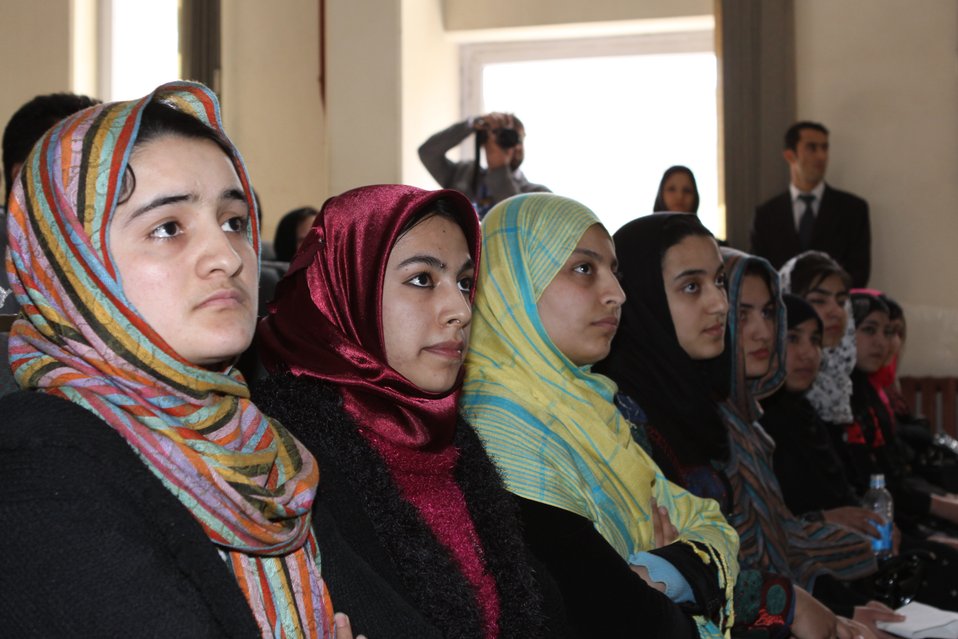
Female University Students Complete Internship

Kabul, Afghanistan | March 16, 2011 – In response to a demand for qualified Afghan engineers, Kabul University celebrated completion of an intensive five-month Mentor Protégé Training Program today by 10 female fourth year university students. The Training Program is a joint effort between the Government of the Islamic Republic of Afghanistan, the U.S. Agency for International Development (USAID), and the Universities of Kabul, Kandahar, Alberoony in Kapisa, Shiekh Zayed in Khost. The graduation ceremony highlighted collaboration with these national institutions in building the technical skills of young Afghans, made possible by USAID.

Four of the interns are engineers, while the remaining six are from the faculties of computer science, economics, and psychology.

Speaking about the event, H.E. Minister of Public Works Abdul Qudus Hamidi said, “The future of Afghanistan lies in developing the skills of our youth, and the engineering skills of these graduates today represent a small but important step forward for the country.”

Keynote speakers at the ceremony included H.E. Deputy Minister of Higher Education Abdul Rahim; USAID Senior Deputy Mission Director Robert Hellyer; and Chancellor of Kabul University Professor Hamidullah Amin. Approximately 150 people, including current and former students attended the graduation.

Launched last year, the Mentor Protégé Training Program has provided qualifying students the opportunity to intern with USAID’s Strategic Provincial Roads-South and East Afghanistan project and gain practical experience in a real work environment. The goal of the program was to offer interns the opportunity to gain hands-on experience to reinforce their formal studies. A total of 30 students from four national universities have benefitted from this program.

“The promotion of women’s rights is integrated into the overall U.S. Government development strategy and can be found in key programs, including education, healthcare, security, rule of law, political participation, agriculture, and economic development,” said Robert Hellyer. “The U.S. Government is committed to the Afghan leadership of programs that directly enhance development, particularly as it relates to women’s issues.”

This event also highlighted the learning achievements of students and emphasized the importance of hands-on internship programs. The curriculum is designed to instill students with the knowledge and confidence to qualify for engineering positions upon completion of their fourth year at their respective universities.